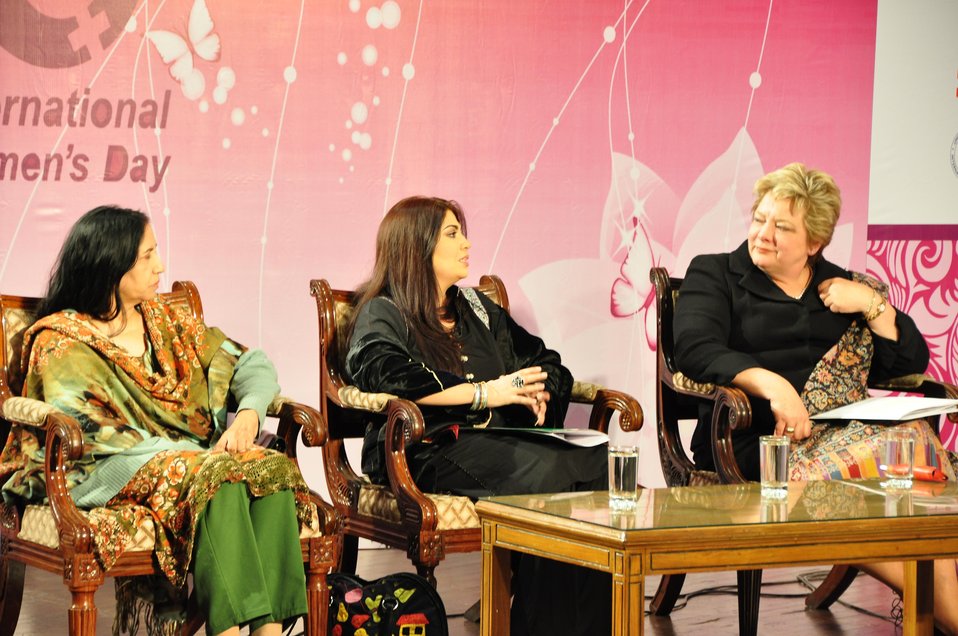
International Women’s Day

Islamabad, March 08, 2012 - The United States Agency for International Development (USAID) celebrated International Women’s Day, hosting a panel discussion with women entrepreneurs.
Panel members in addition to USAID’s
- Karen Freeman
- Wajeeha Nasreen, Sr. Product Development Manager, Gul Ahmed (famous Pakistani fabric brand)
- Dr. Nosheen, CEO, Generations (famous clothing brand)
- Razia Zubairi, Director General, Technical Education and Vocational Training Authority, Punjab
- Shaheen Khan, Sales Agent, ECDI, USAID sub-grantee